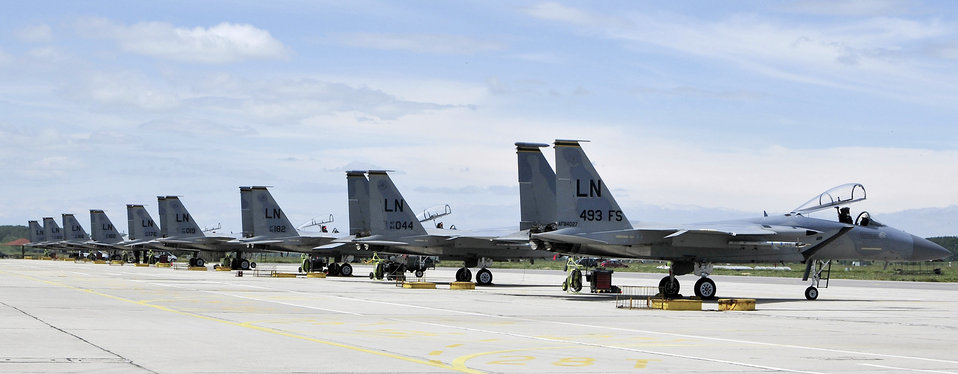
Airmen join international community at Anatolian Eagle

F-15 Eagles from the 493rd Fighter Squadron line the flightline May 18, 2010. Airmen from the 493rd FS are taking part in Anatolian Eagle from June 7 to June 17, at the Third Main Jet Base in Konya, Turkey. The exercise will test their ability to integrate into a large-scale, multinational team with five countries and NATO.